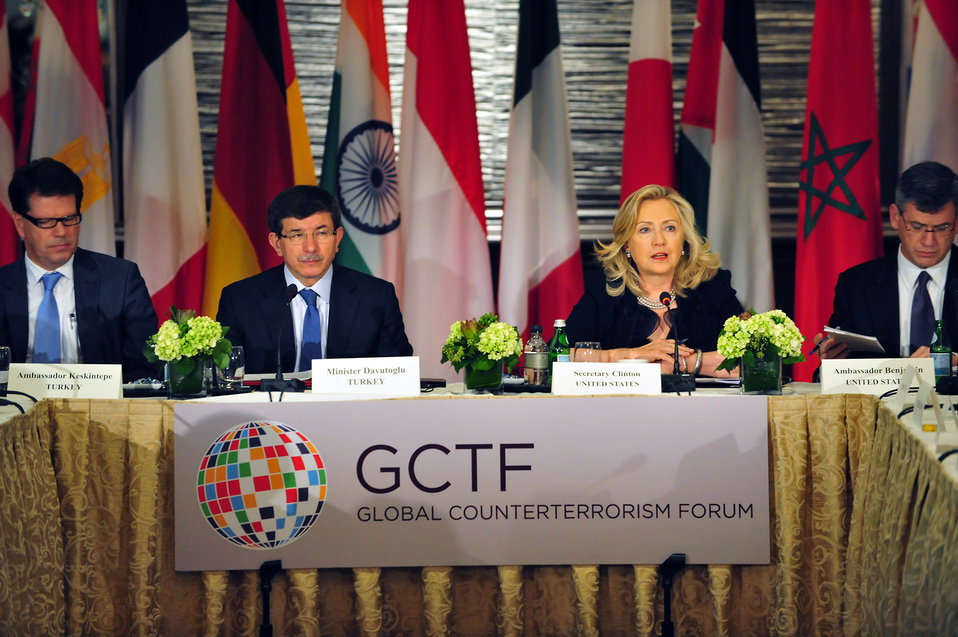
Secretary Clinton Delivers Remarks at the Official Launch of the Global Counterterrorism Forum

U.S. Secretary of State Hillary Rodham Clinton delivers remarks at the official launch of the Global Counterterrorism Forum, at the Waldorf-Astoria Hotel in New York, New York, on September 22, 2011.